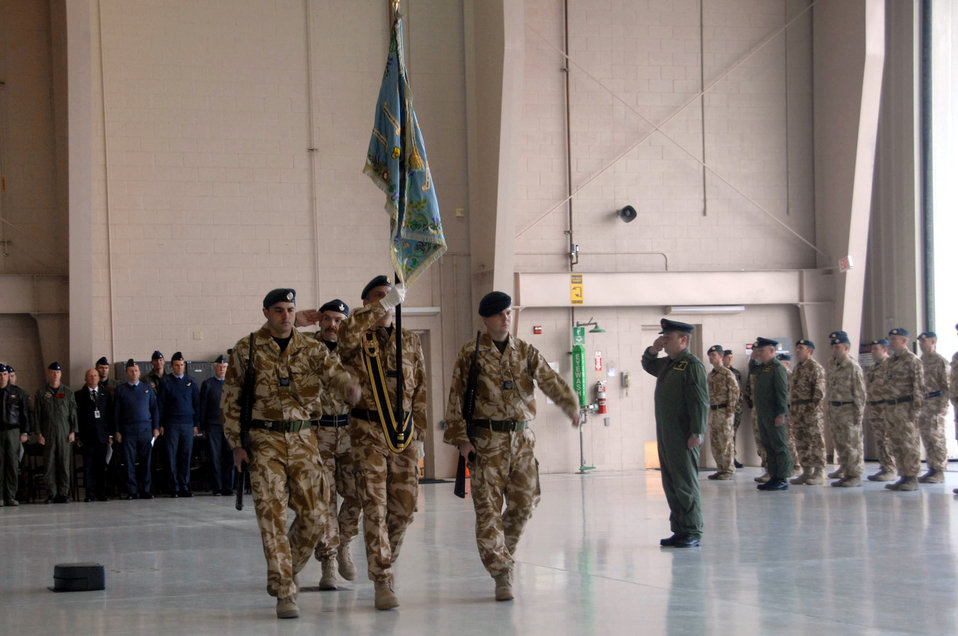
RAF activates unmanned aerial vehicle squadron at Creech

Royal Air Force Flight Lt. Bert Weedon along with honor guard members present the 39th United Kingdom Reaper Squadron colors during an activation ceremony Jan. 23 at Creech Air Force Base, Nev. RAF officials activated an unmanned aerial vehicle squadron during the ceremony.